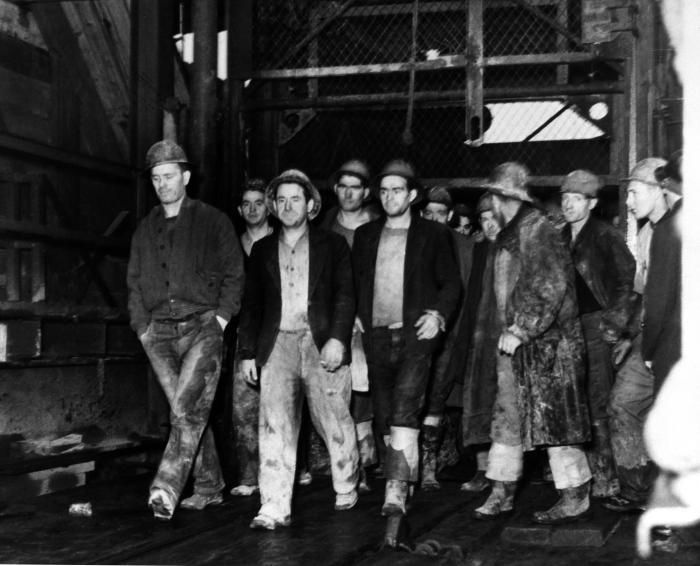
This historical image was provided by the Center for Disease Control's (CDC), National Institute for Occupational Safety and Health (NIOSH). The photograph depicted a group of tunnel workers as they were emerging from a 'man lock' inside the Queens Midtown Tunnel, in Queens, New York, while the subterranean passageway was under construction. A man lock is an airlock which acts as an air pressure equalizer, allowing it occupants to enter from one pressurized environment, and emerge into an environment, which is under a different air pressure. Note that all these men were wearing hardhats, but none of the workers were wearing gloves, or filtered breathing masks, though it cannot be determined from this image if these items were necessary.